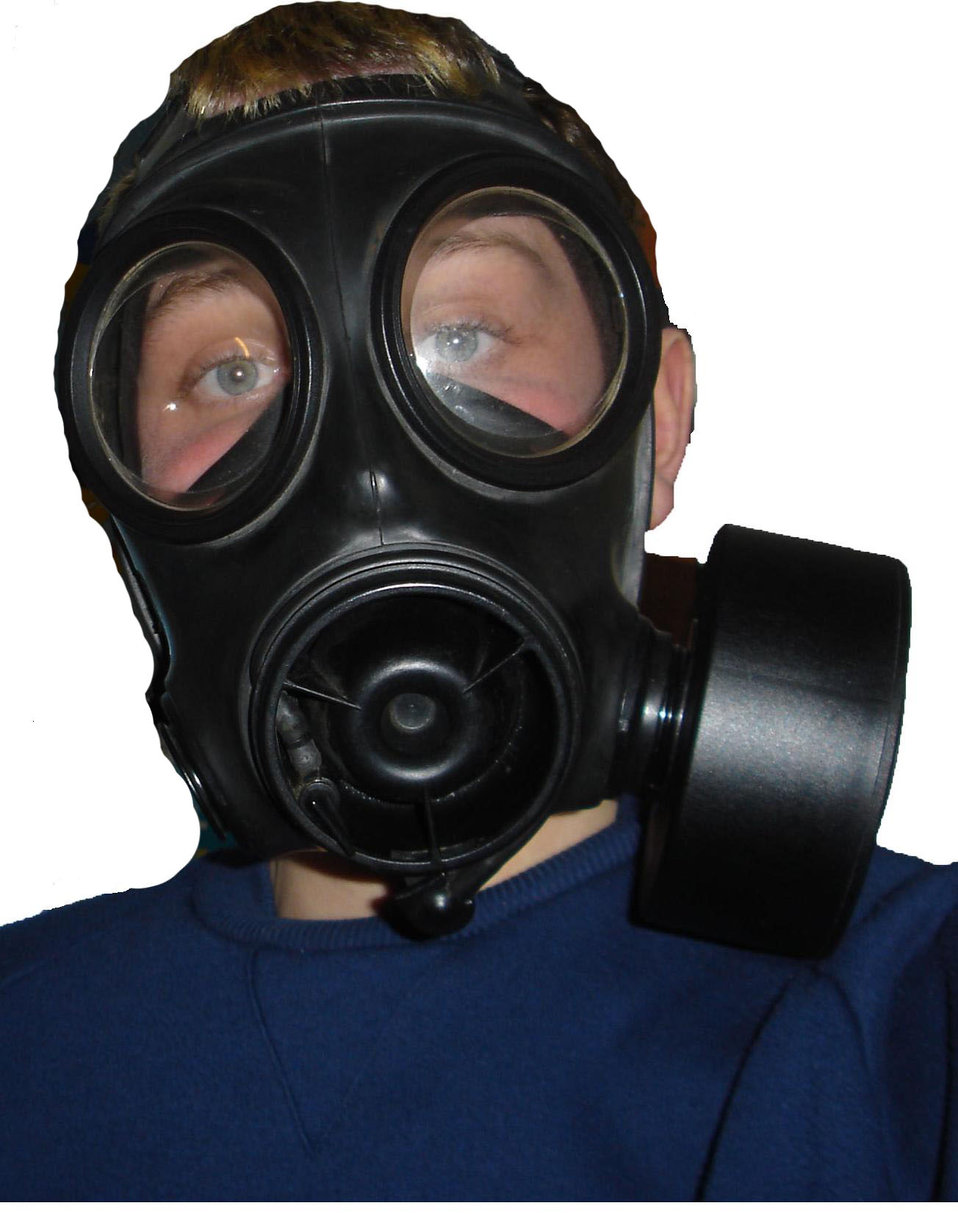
S10 Gas Mask Respirator Avon